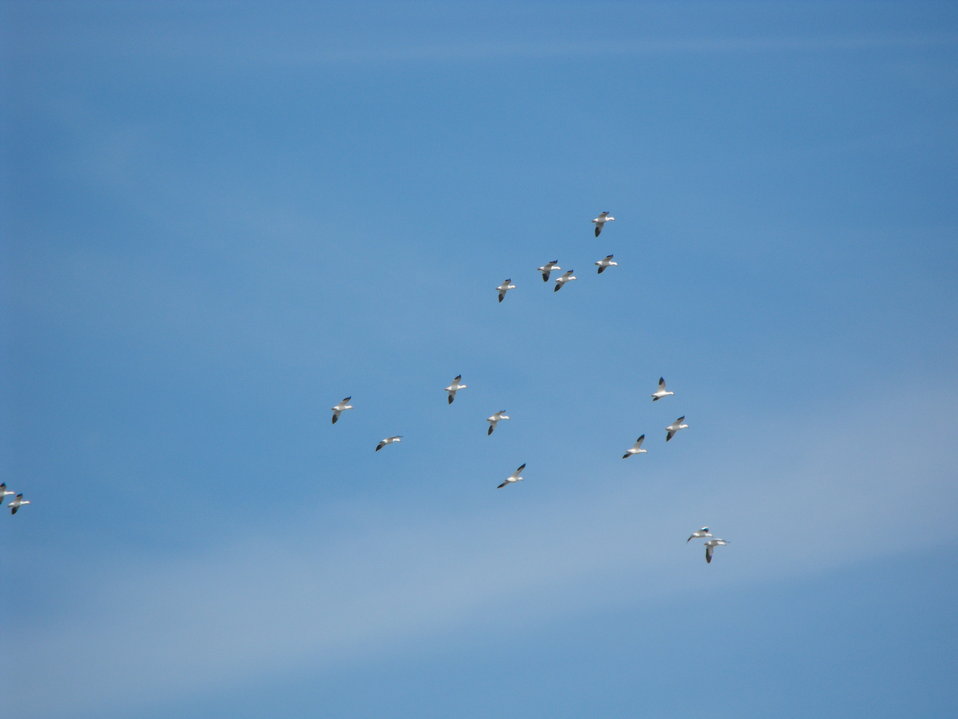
Snow geese migration

Snow geese coming in for a landing on Snow Goose Pool, Wildlife Loop at Chincoteague National Wildlife Refuge.